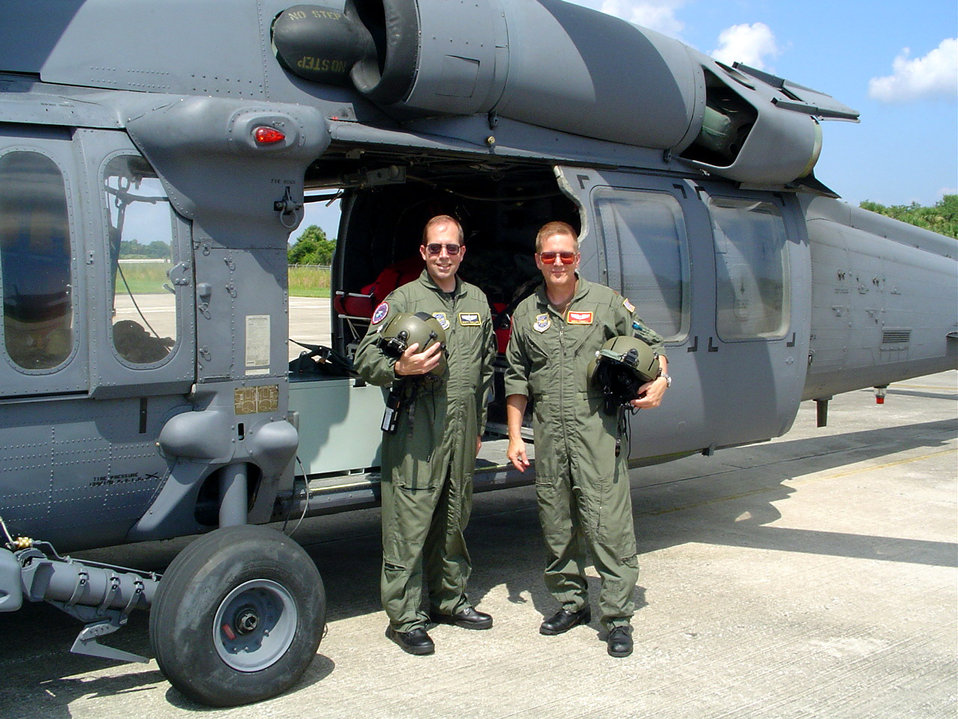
Grissom doctors moonight for NASA

Lt. Col. (Dr.) Scott Phillips, left, and Maj. (Dr.) Greg Pinnell stand next to a rescue helicopter near Cape Canaveral Fla. The two doctors with the 434th Aerospace Medicine Squadron moonlight with NASA as part of a shuttle recovery medical team.